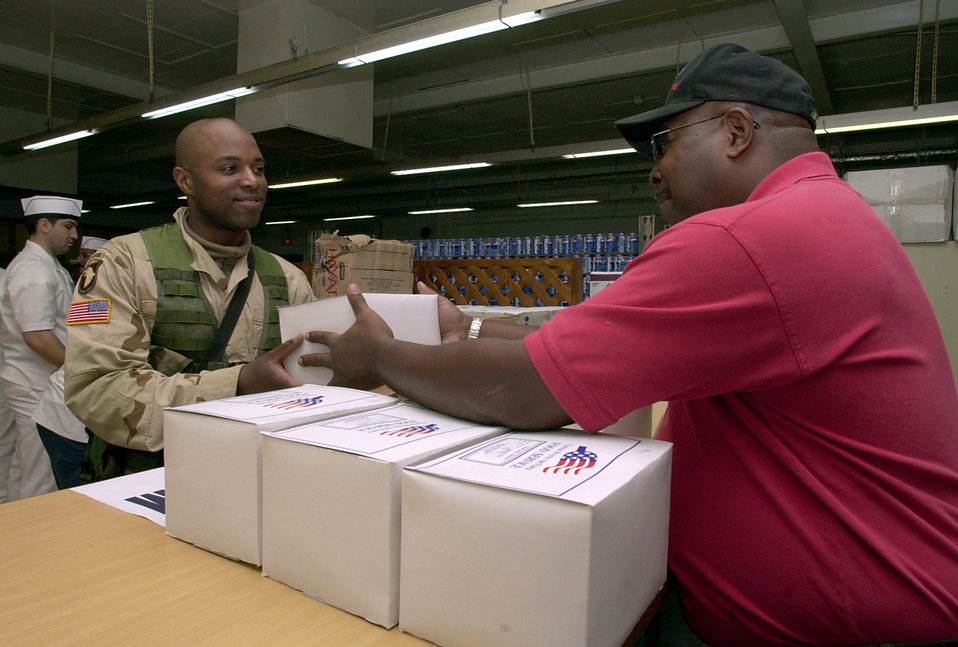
Terminal lunch

INCIRLIK AIR BASE, Turkey -- Tony Hudgens hands a lunch box to Army Spc. Ron Weeks. Mr. Hudgens is the base's 39th Services Squadron food service supervisor and Specialist Weeks is a Chinook helicopter mechanic from the 101st Airborne Division at Fort Campbell, Ky. Thousands of soldiers transiting the base during a large-scale Army troop changeover in Southwest Asia are passing the time in a terminal specially equipped to make the wait more tolerable.